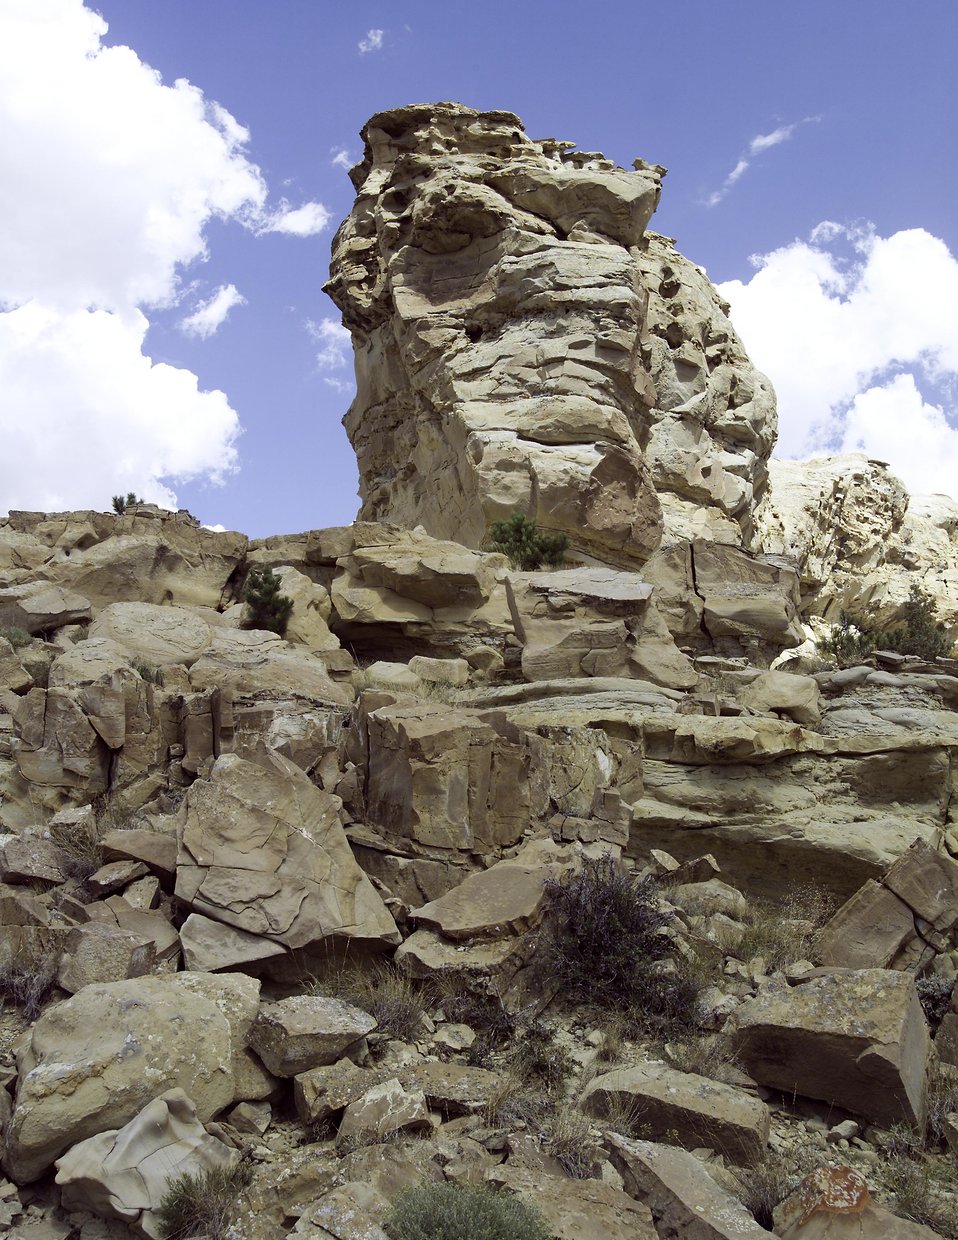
Hills surround Naval Petroleum Reserve No.3 (NPR-3) near Casper, Wyoming.

The Rocky Mountain Oilfield Testing Center (RMOTC) is a Department of Energy field test site for emerging and developing technologies to address critical energy issues. The field test site, located on Naval Petroleum Reserve No.3 (NPR-3), is a 10,000-acre site. There are approximately 700 well bores with 600 producing wells ranging in depth from 500 to 5,000 feet.